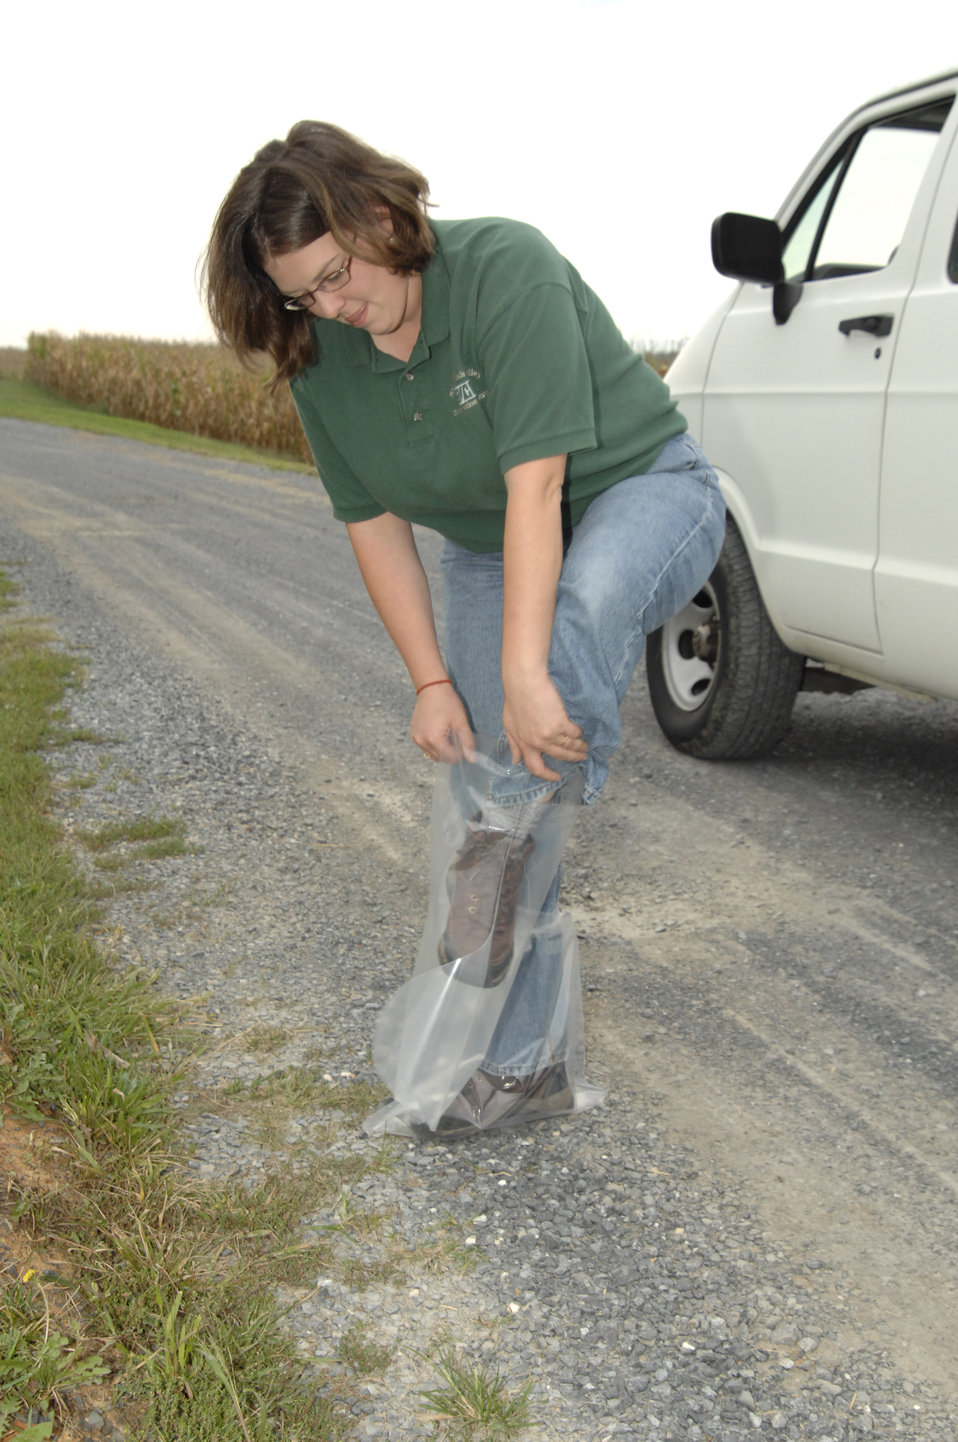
A U.S. Department of Agriculture (USDA) inspector takes necessary precautions to prevent the spread of any diseases between poultry farms in Rockingham County, Virginia on September 8, 2008.